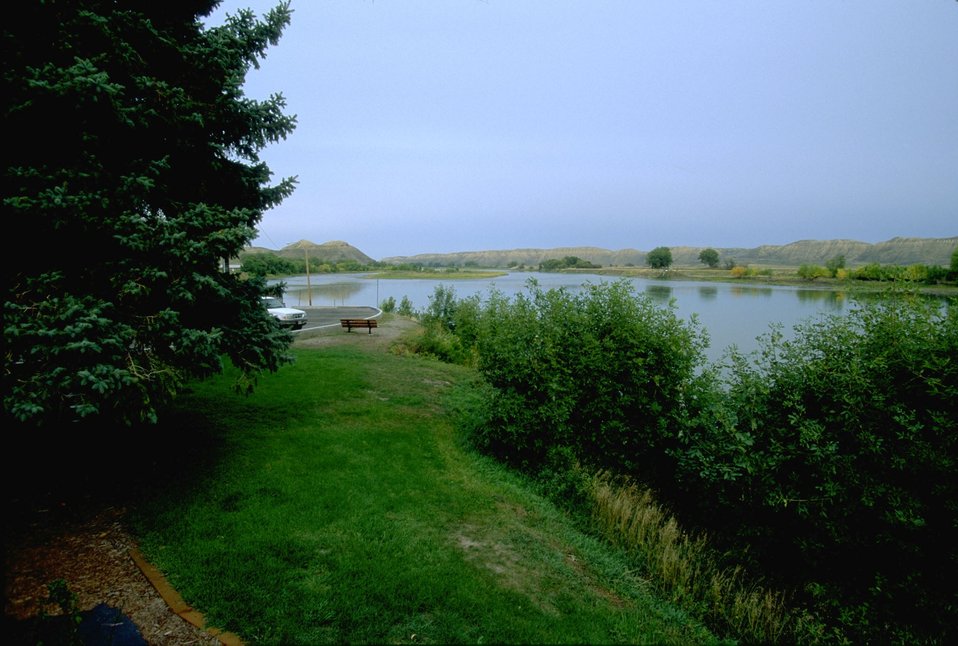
Missouri River at Fort Benton